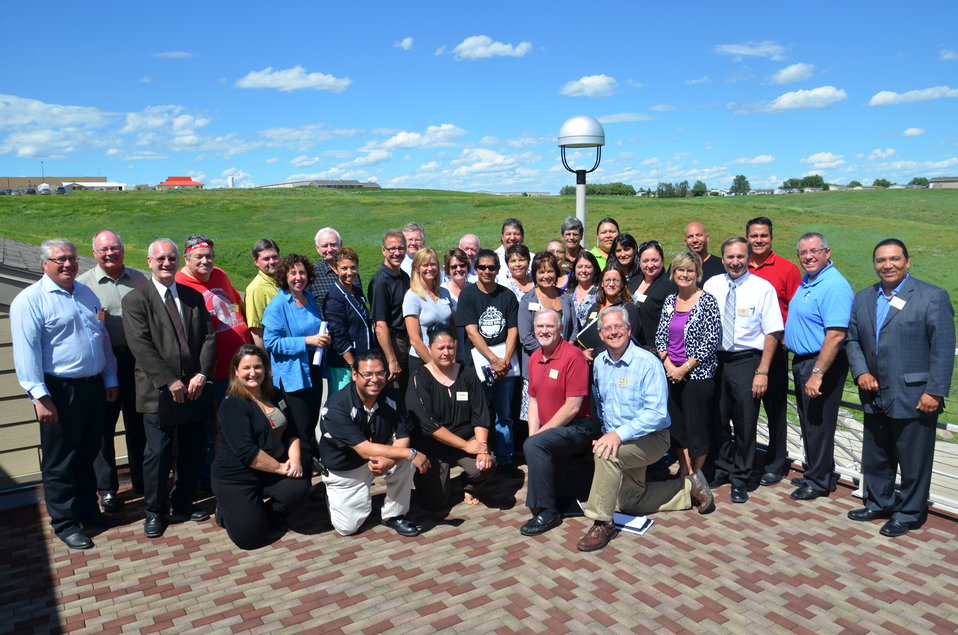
Housing Coalition Group Photo

Six of the nine Indian reservations in South Dakota, including representatives of six Indian housing authorities, the Governor’s Office of Economic Development, the U.S. Department of Agriculture (USDA) Rural Development (RD), the U.S. Departments of Housing and Urban Development, Veterans Affairs, and Indian Health Service gathered for a daylong session to work on a solution to bring safe, affordable housing to South Dakota’s tribal areas.